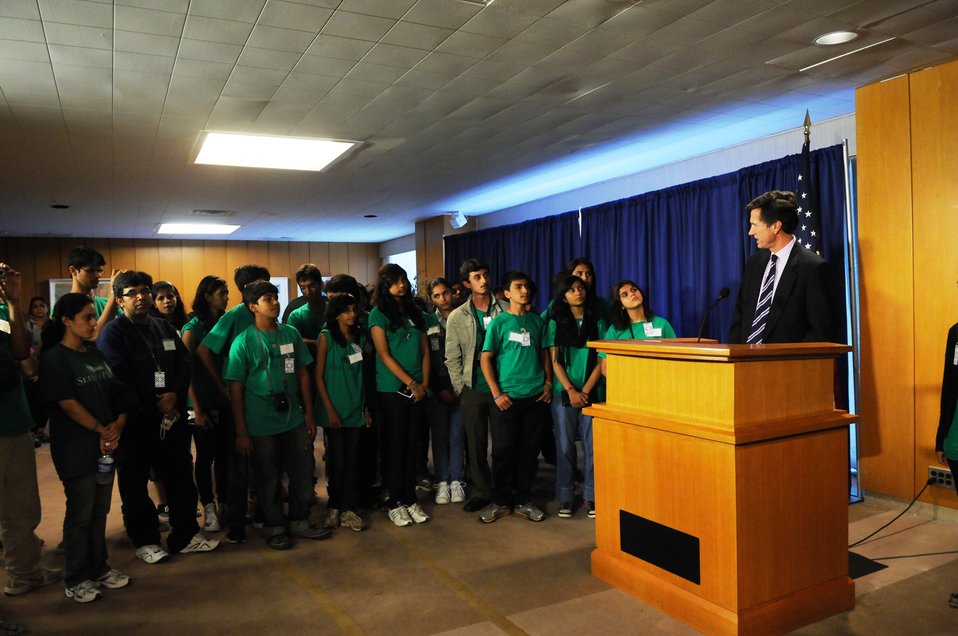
Assistant Secretary Blake Delivers the Opening Remarks

U.S. Assistant Secretary of State for South and Central Asian Affairs delivers the opening remarks at the Seeds of Peace reception at the U.S. Department of State in Washington, D.C., on July 14, 2010.